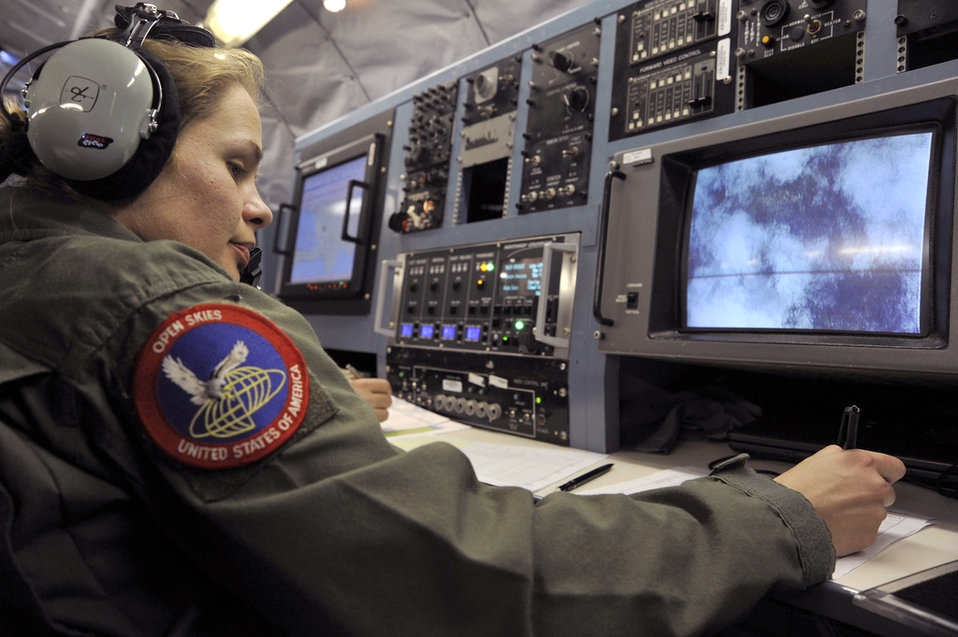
DTRA Airman

Staff Sgt. Agne Mileviciute writes in a mission log Jan. 16, 2010, as pictures are taken over Haiti by an OC-135B Open Skies observation aircraft.